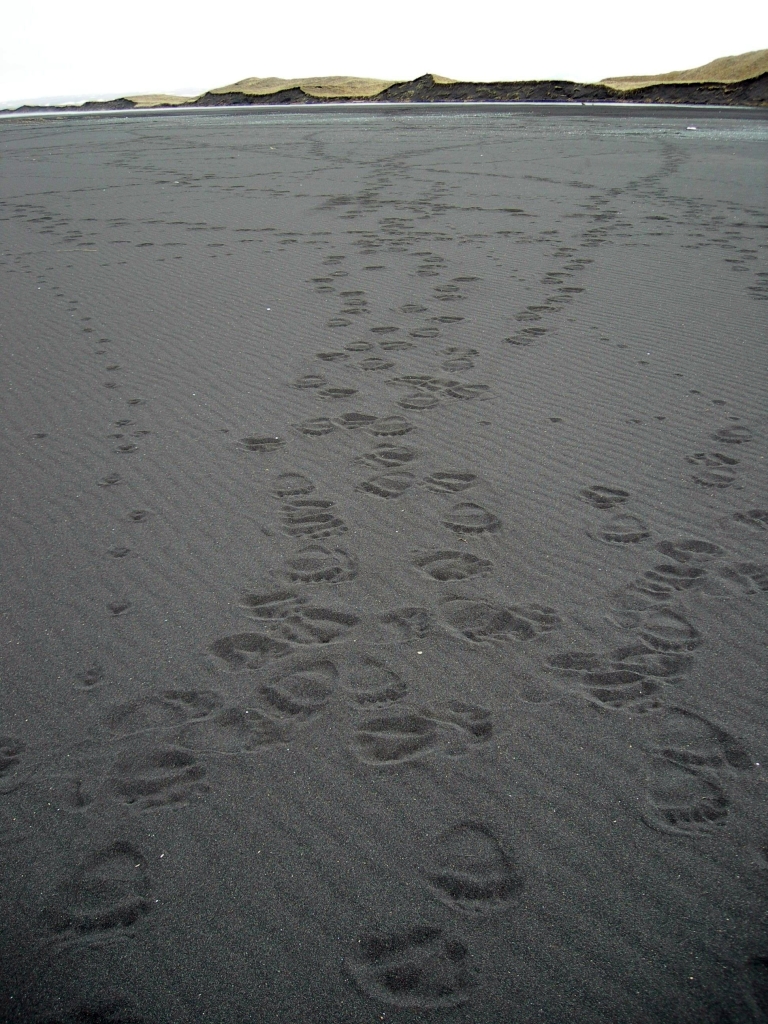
Wolf and bear tracks

Tracks on the beach, Unimak Island, Alaska Maritime National Wildlife Refuge